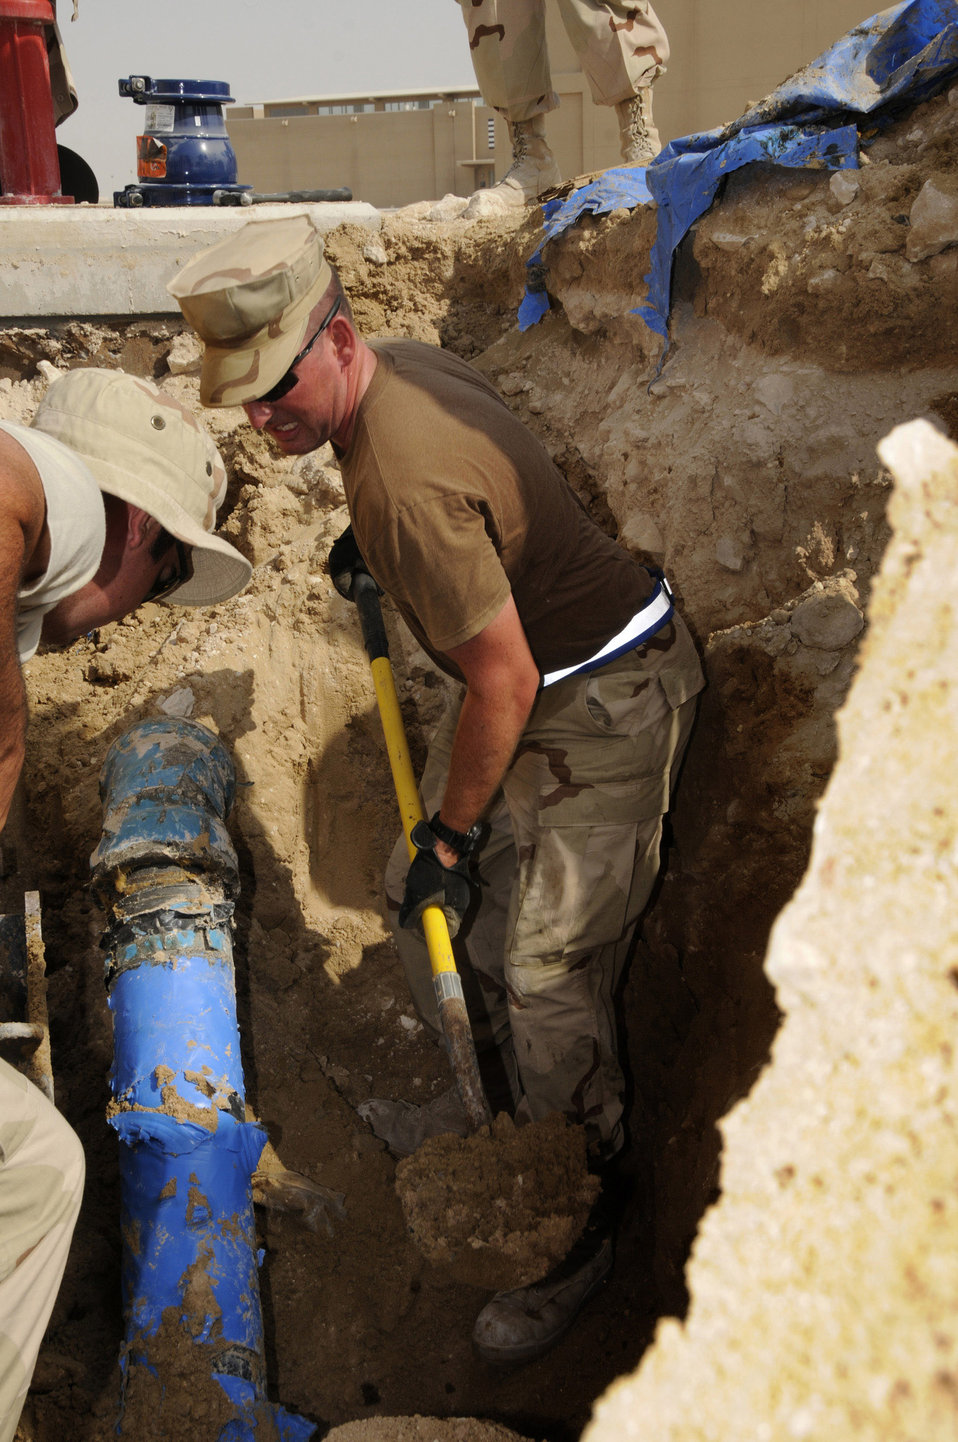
Emergency repairs

Tech. Sgt. James Thomas and Airman 1st Class Jonathan Church shovel dirt and rock away from the base of a broken water main Sept. 15 at a Southwest Asia air base. Shovels are used for the close in work of clearing dirt and rock from the section of pipe, so work can begin on water restoration procedures here. The engineers work to restore water after the overnight pipe break caused a shut down of water for the entire Blatchford-Preston Complex. Sergeant Thomas hails from Atlanta and is deployed from Charleston Air Force Base, S.C. Airman Church is a native of Gloucester, Mass., and is deployed from McGuire AFB, N.J. Both are assigned to the 379th Expeditionary Civil Engineer Squadron.